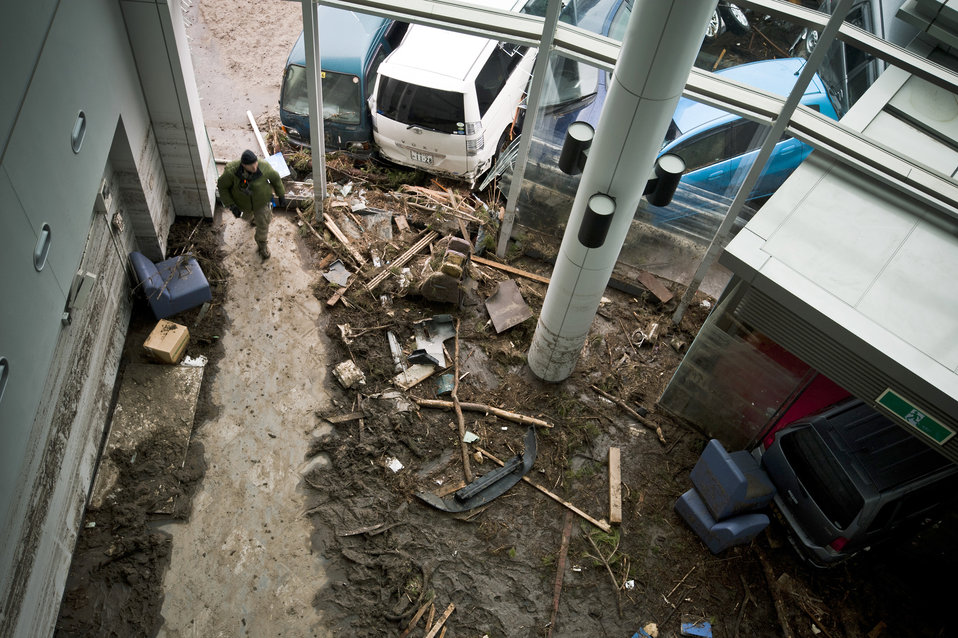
Headline

A U.S. Air Force pararescueman from the 320th Special Tactics Squadron (STS) looks for trapped survivors at Sendai Airport, Japan, March 16, 2011. Members of the 320th STS from Kadena Air Base, Japan, deployed to Sendai Airport to help clear the runway and make it ready for fixed-wing aircraft traffic.